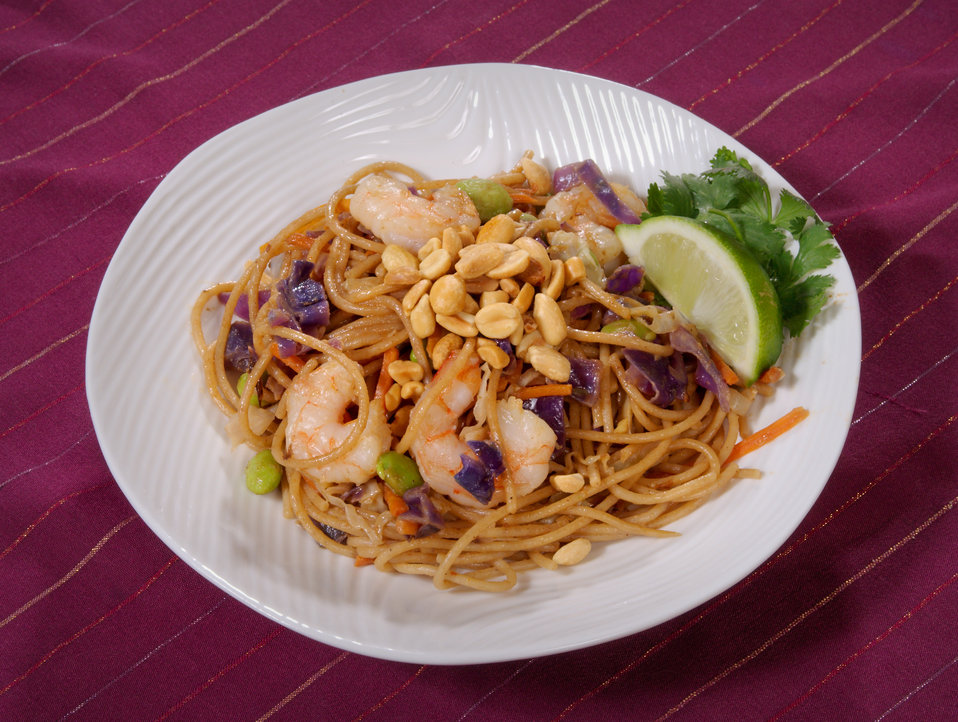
This image depicts a dish entitled, Soba Peanut Noodles with Shrimp. The recipe calls for whole-wheat spaghetti, crunchy peanut butter, cabbage, carrots, edamame, ginger, garlic, low-sodium chicken broth, shrimp, Hoisin sauce, chili paste, and cilantro. The recipe may be downloaded using the link below. This dish is high in protein, fiber, and vitamins A and C.